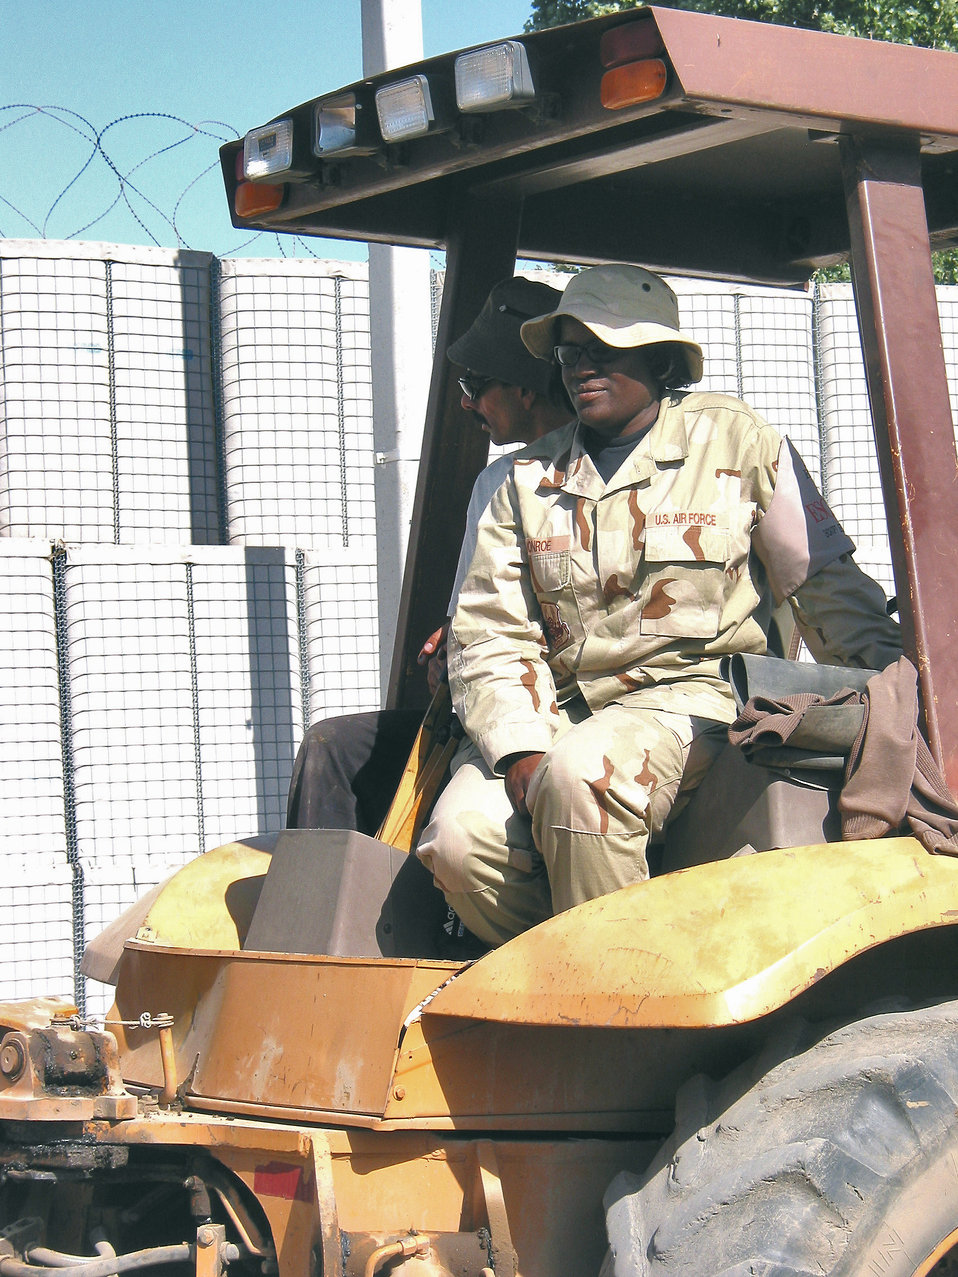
Operation Enduring Freedom

MANAS AIR BASE, Kyrgyzstan -- Staff Sgt. Melody Monroe watches as contractors dig a hole here. She is a security escort with the 376th Expeditionary Civil Engineer Squadron.